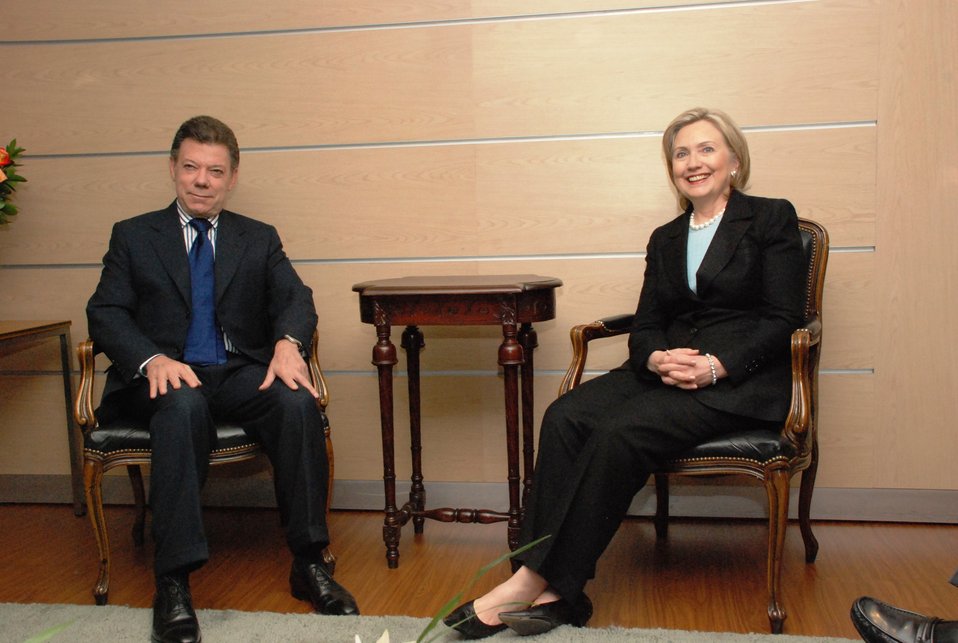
Secretary Clinton Meets With Colombian Presidential Candidate Juan Manuel Santos

U.S. Secretary of State Hillary Rodham Clinton meets with Colombian Presidential Candidate Juan Manuel Santos to discuss issues of bilateral interest at the Hotel Charleston in Bogotá, Colombia, on June 9, 2010.